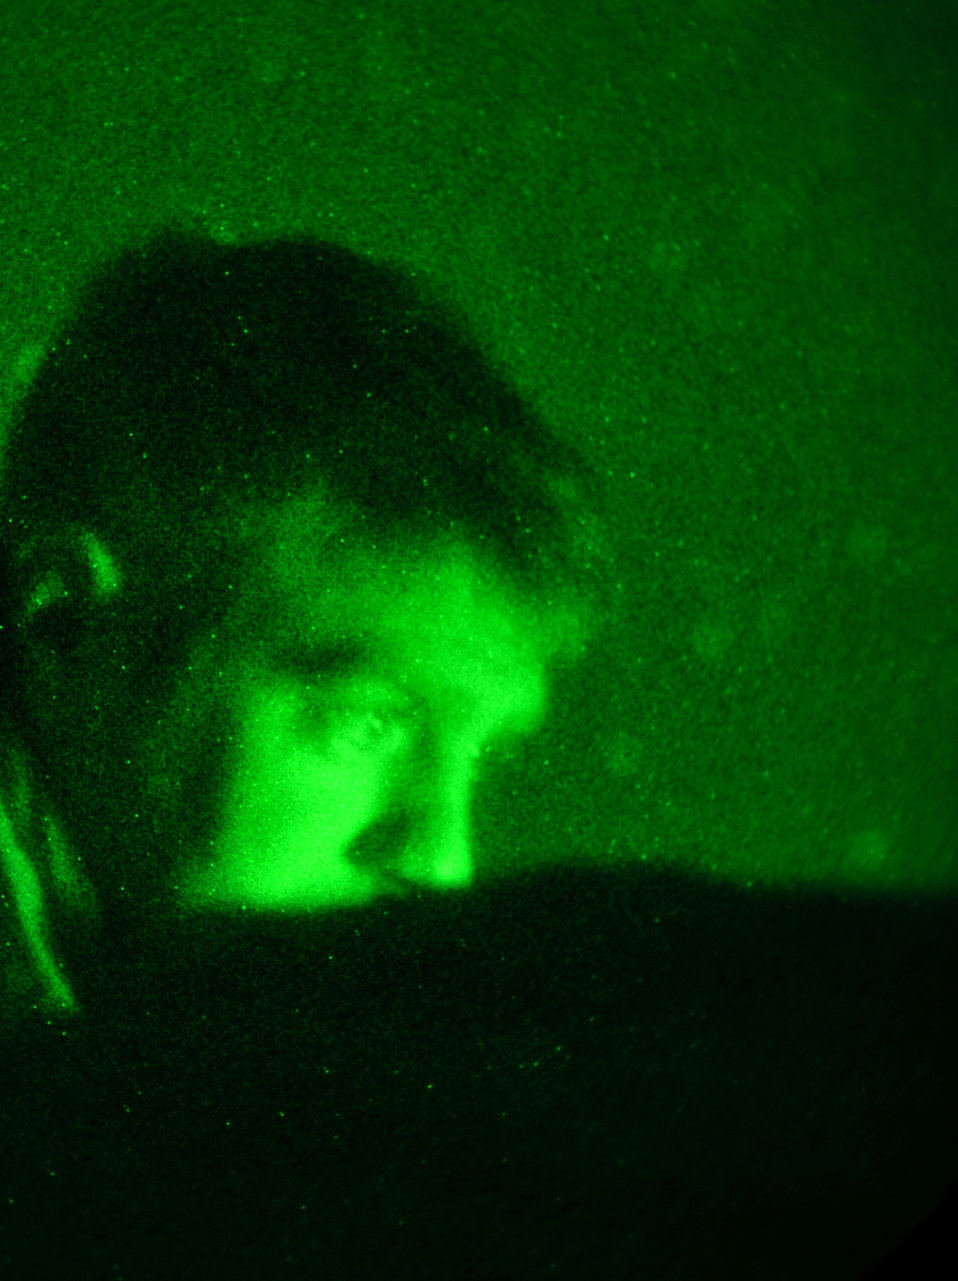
JTACs

Tech. Sgt. Jonathan Oliver communicates with an F-16 Fighting Falcon pilot while watching a live feed of the aircraft's targeting pod March 27, 2011, during Operation Bull Whip in Laghman province, Afghanistan. Sergeant Oliver is a joint terminal attack controller assigned to Bagram Airfield's 817th Expeditionary Air Support Operations Squadron.